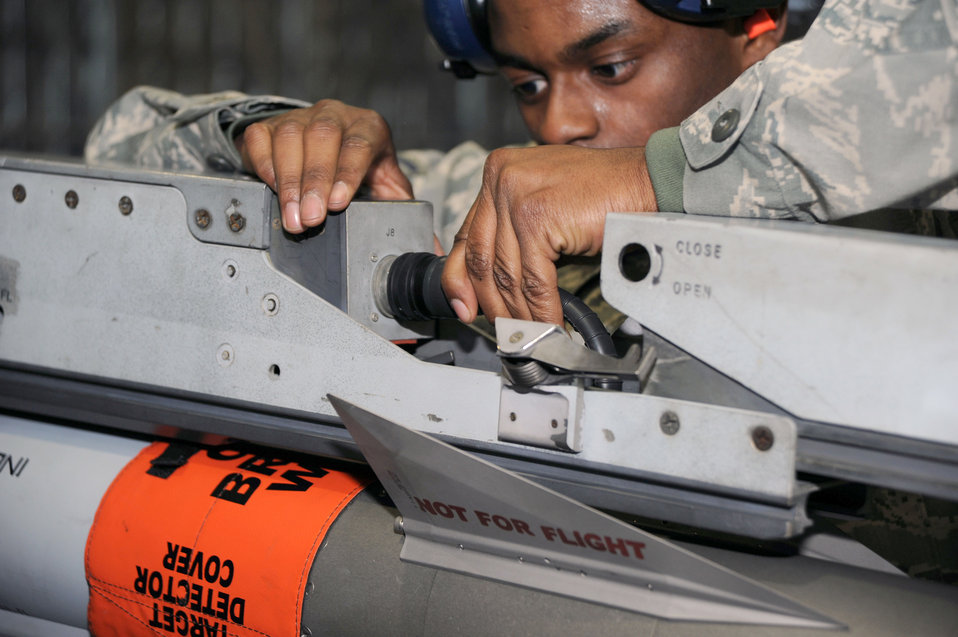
Load crew competition

Staff Sgt. Rodney Akins connects an umbilical cable to a missile launcher Dec. 17, 2010, at Misawa Air Base, Japan, during the wing load crew competition. During the competition, the Airmen are graded on a variety of areas including, speed, accuracy, appearance and safety. Sergeant Akins is a weapons load crewmember with the 35th Maintenance Squadron.